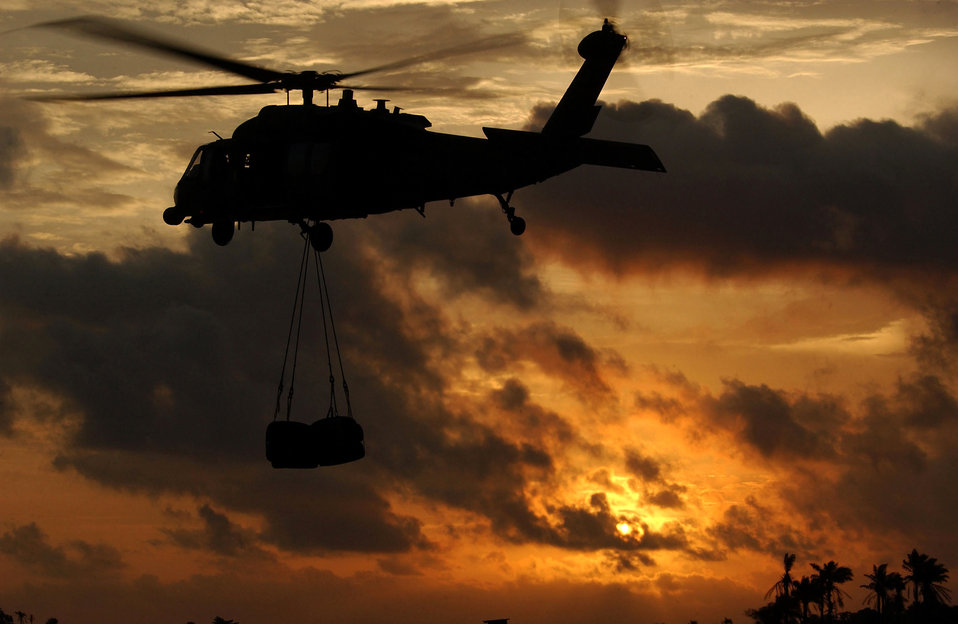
Into the setting sun

LUNGI, Sierra Leone -- An HH-60G Pave Hawk helicopter with the 56th Rescue Squadron, Naval Air Station Keflavik, Iceland, flies into the sunset during external slingload training.